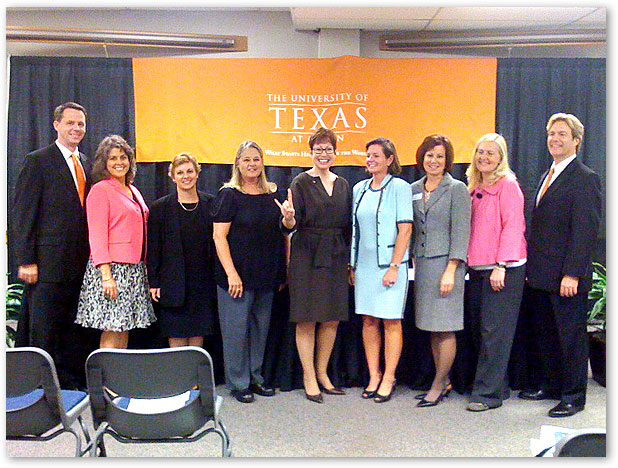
Baker Field1

Commissioner Baker - The University of Texas Distance Learning Center, 9-21-09